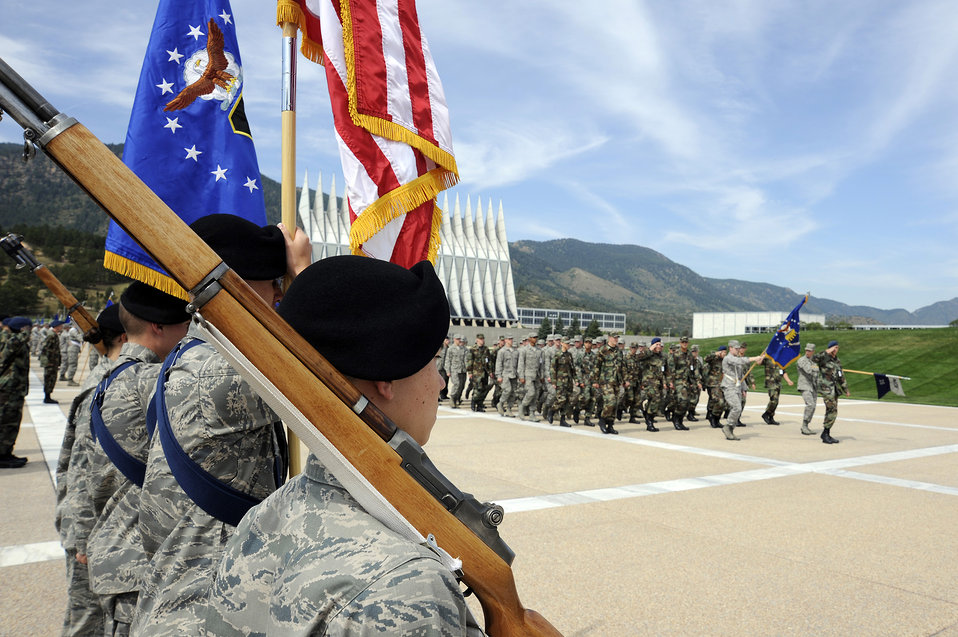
Academy faculty, cadets honor Air Force's 62nd birthday

U.S. Air Force Academy Cadet Squadron 35 passes the Cadet Honor Guard during a parade at the U.S. Air Force Academy in Colorado Springs, Colo., celebrating the Air Force's 62nd birthday Sept. 18, 2009.